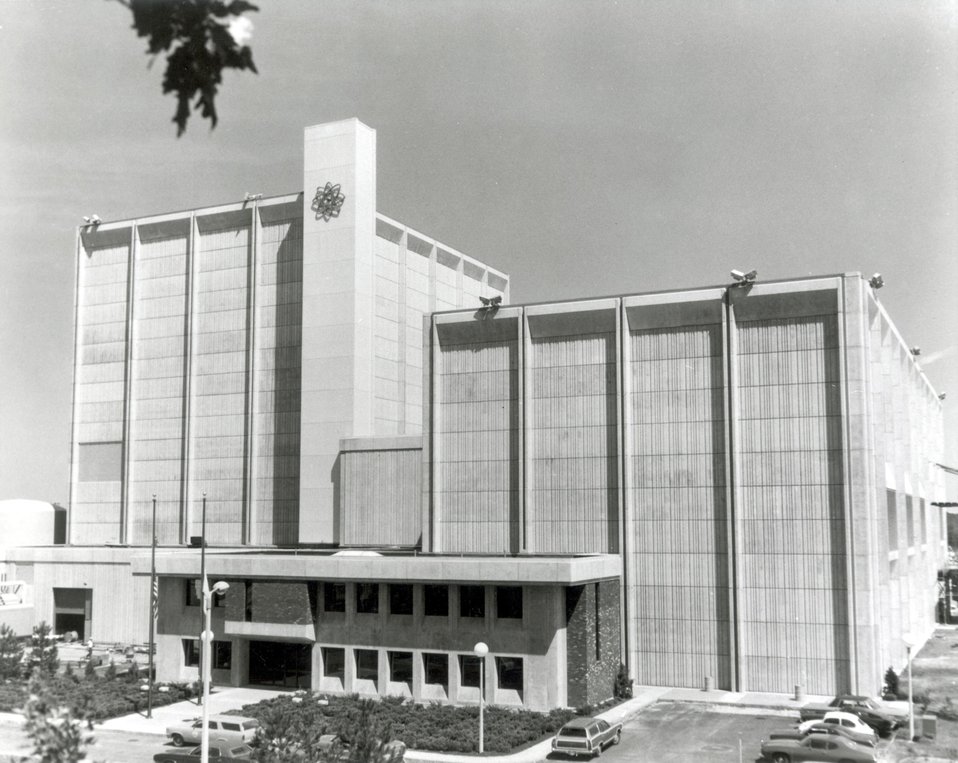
Boston Edison Company's Pilgrim Station Unit 1 at Plymouth, Mass. Circa 1972.